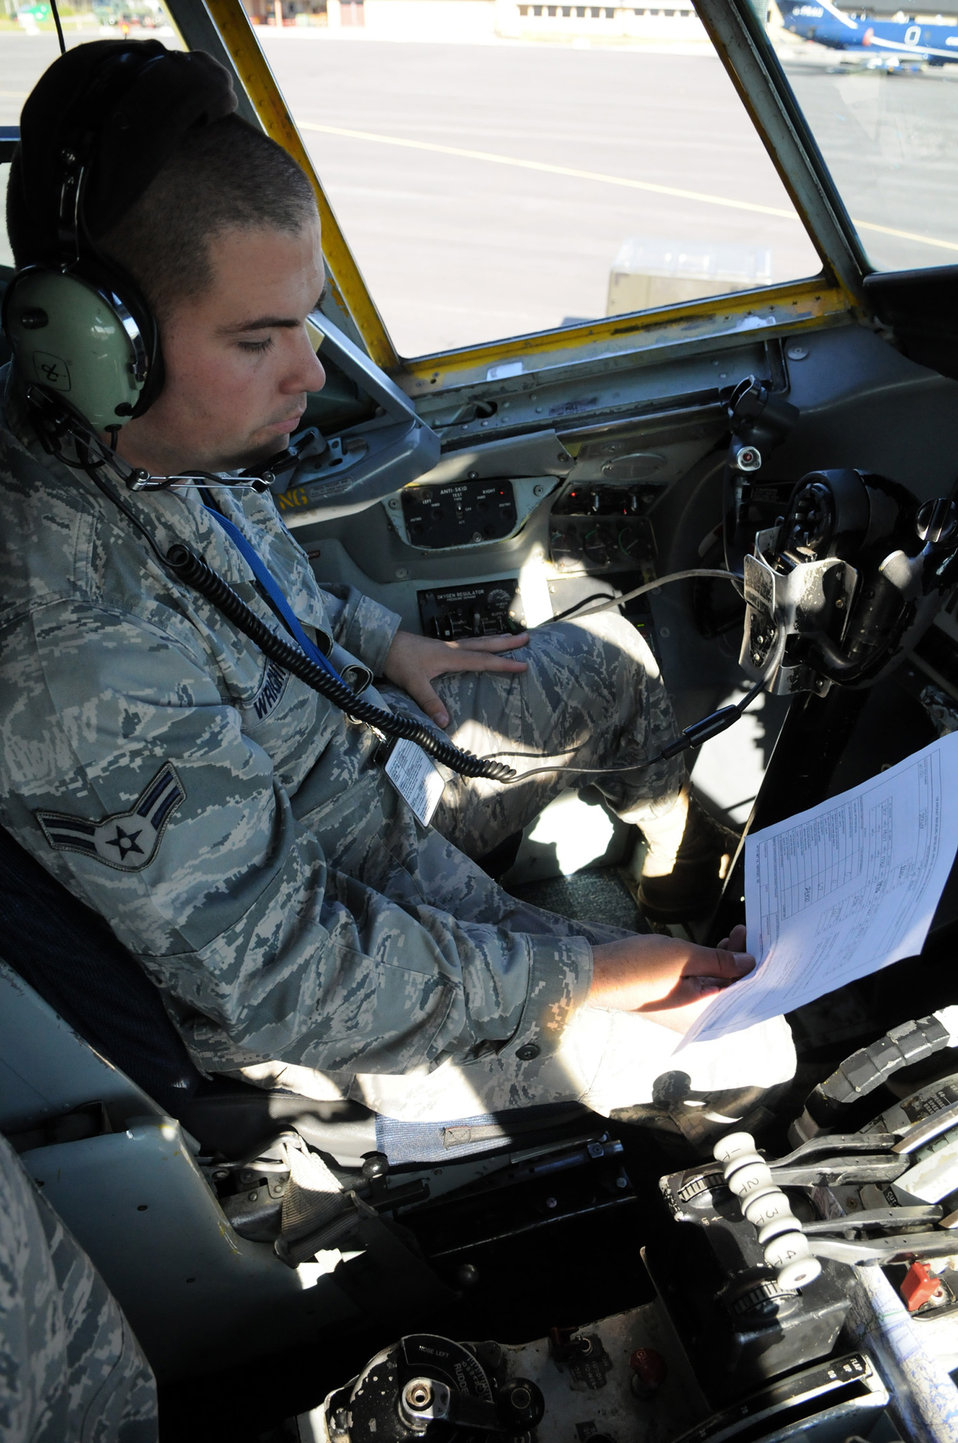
Mildenhall tanker crew deploys to Sweden for exercise support

Airman 1st Class Josh Wright performs preflight checks aboard a KC-135 Stratotanker before the first mission of Exercise Loyal Arrow 2009 June 8 in Lulea, Sweden. Loyal Arrow is an exercise in Sweden involving more than 10 countries and 1,000 military members. Airman Wright is assigned to the 100th Aircraft Maintenance Squadron.